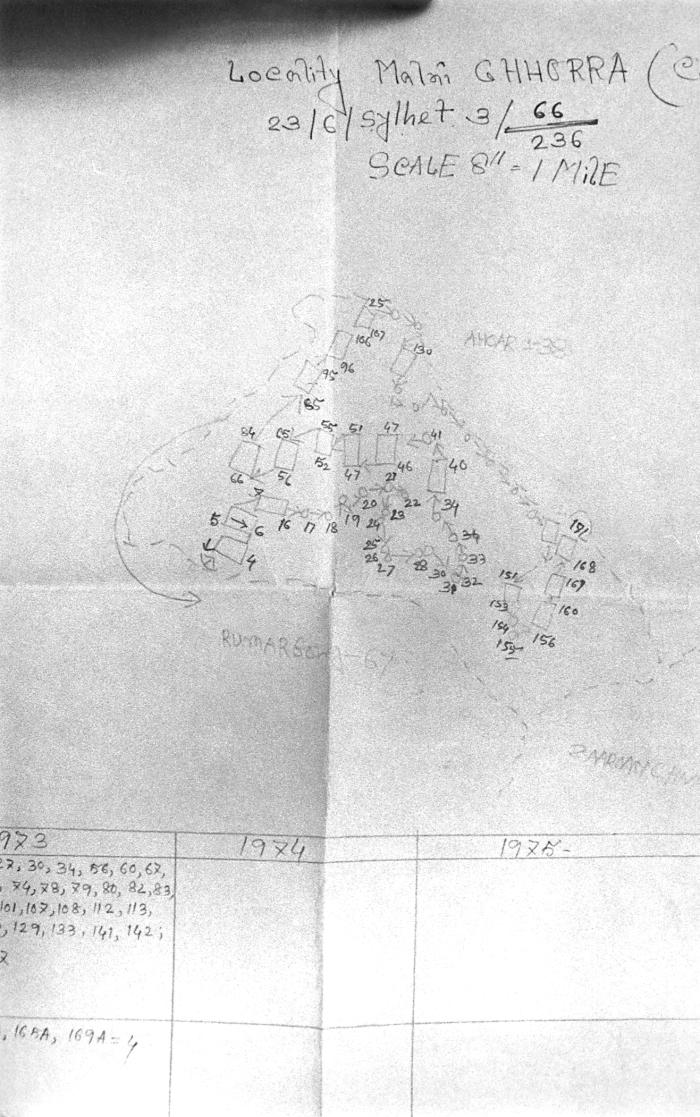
This was a record of a community's homes that had been mapped by their designated number. Based on the data accompanying this image, it is not clear whether or not this was a containment-based map, or a search-based map.